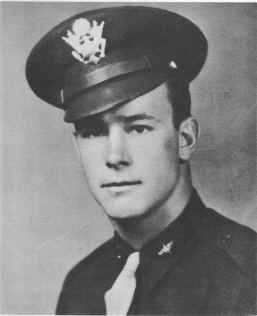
2nd Lt. Lloyd H. Hughes